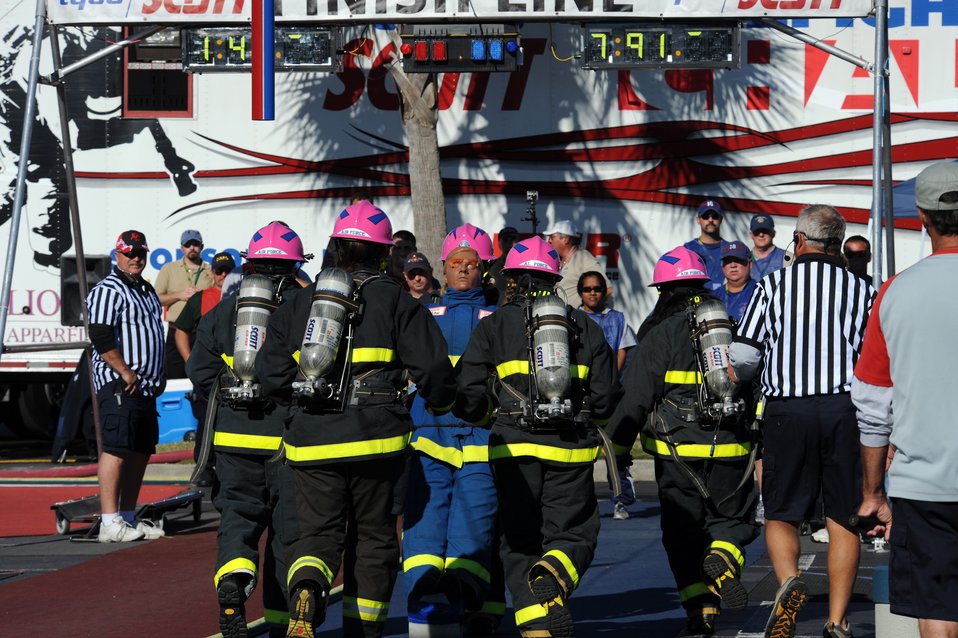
Academy firefighters win 3 world titles

Team Fire Fembots race to the finish as they compete in a relay firefighter event Nov. 13, 2010, at the 2010 Scott Firefighter Combat Challenge in Myrtle Beach, S.C. The Fire Fembots represent the Air Force Academy and won first place in the female division.